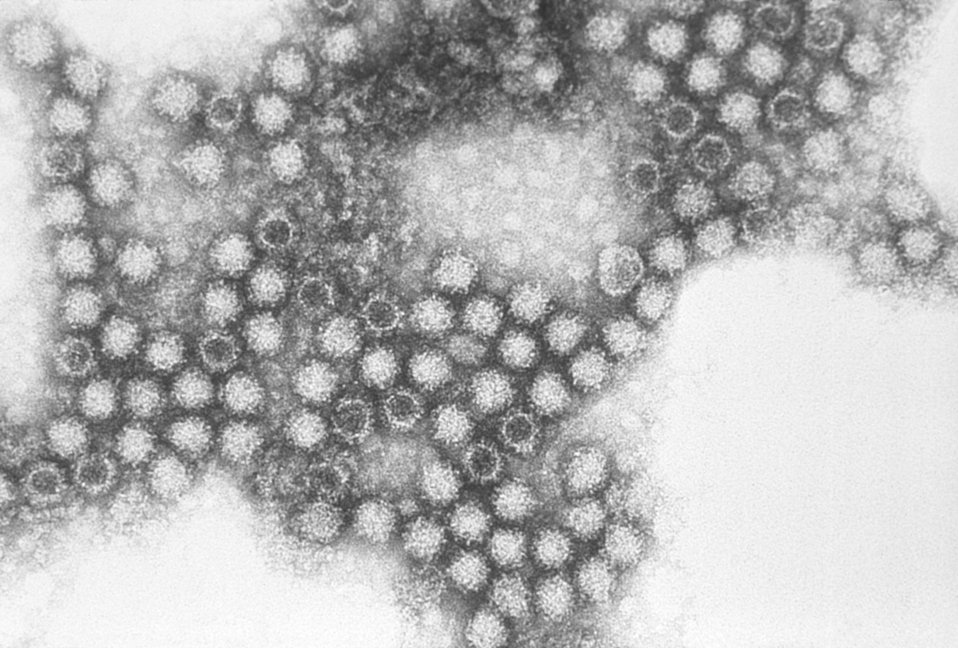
This electron micrograph reveals the morphologic traits exhibited by the feline calicivirus (FCV), a Caliciviridae family member